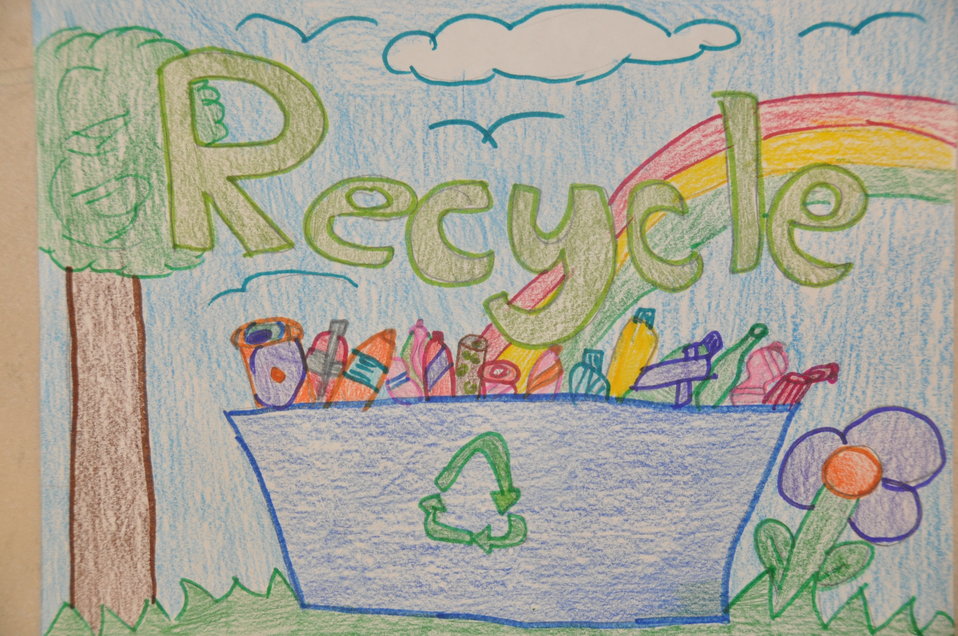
Nicole, Grade 6, Connecticut